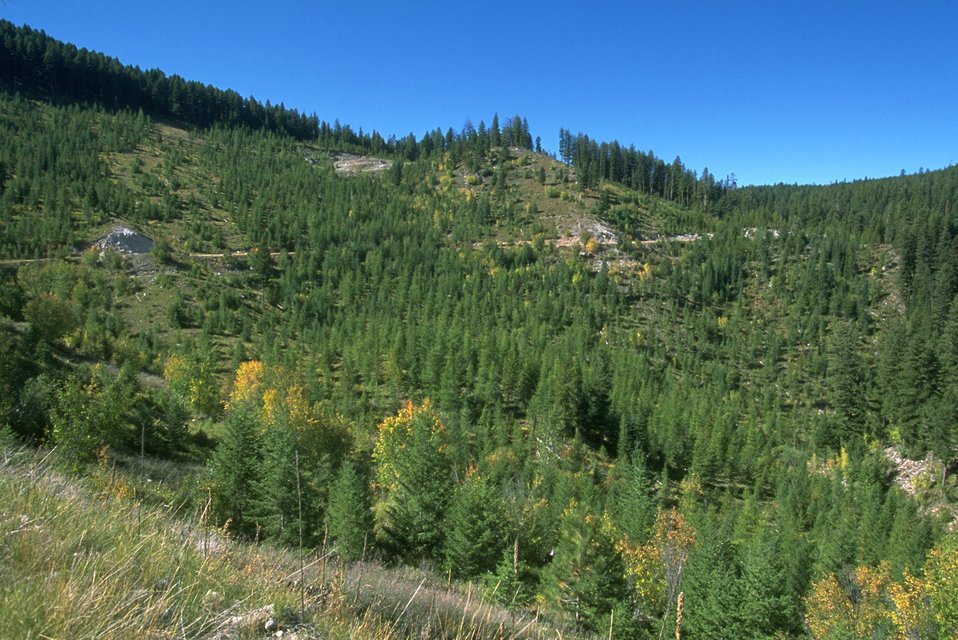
Garnet Back Country Byway from old timber cut